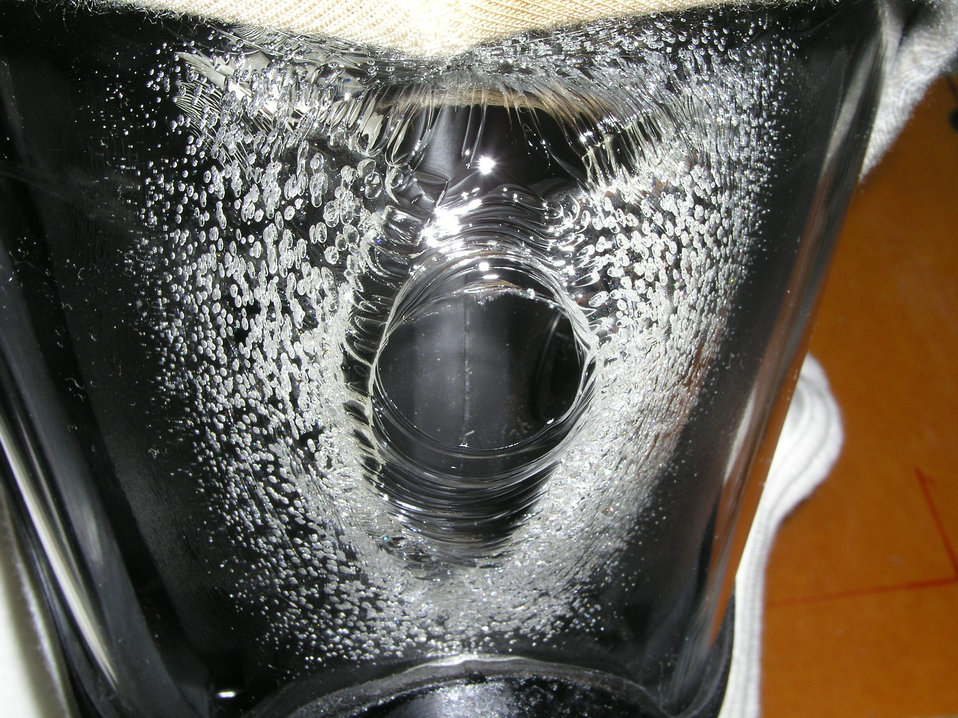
Firefighter Breathing Apparatus

Typical fire-fighter breathing apparatus damaged in NIST tests shows facepiece warping under high heats.